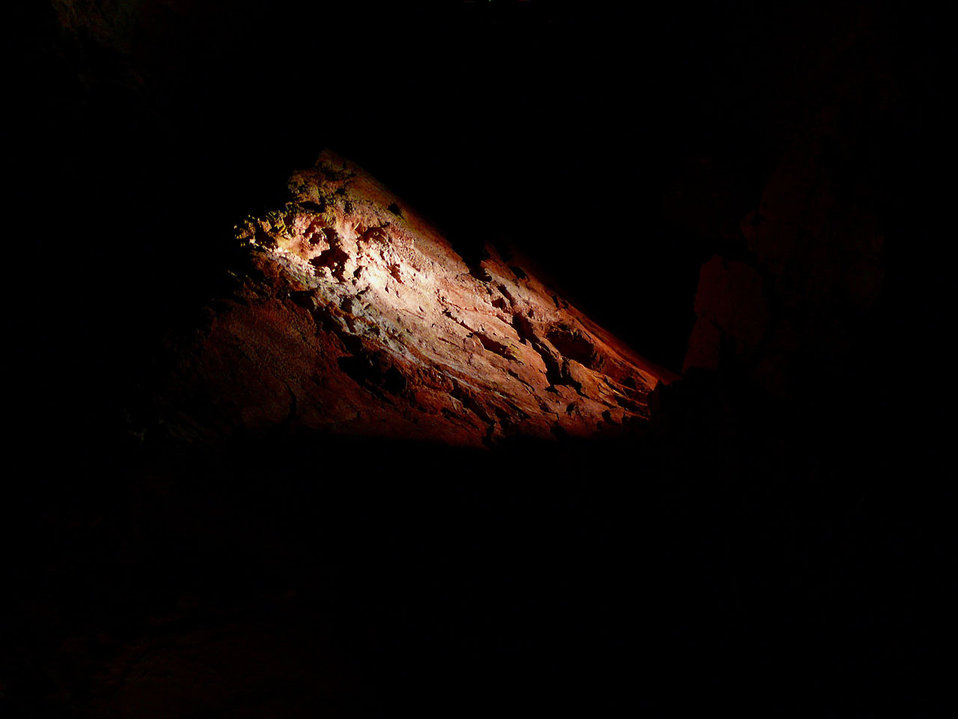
Kents cavern

Cave in torquay.